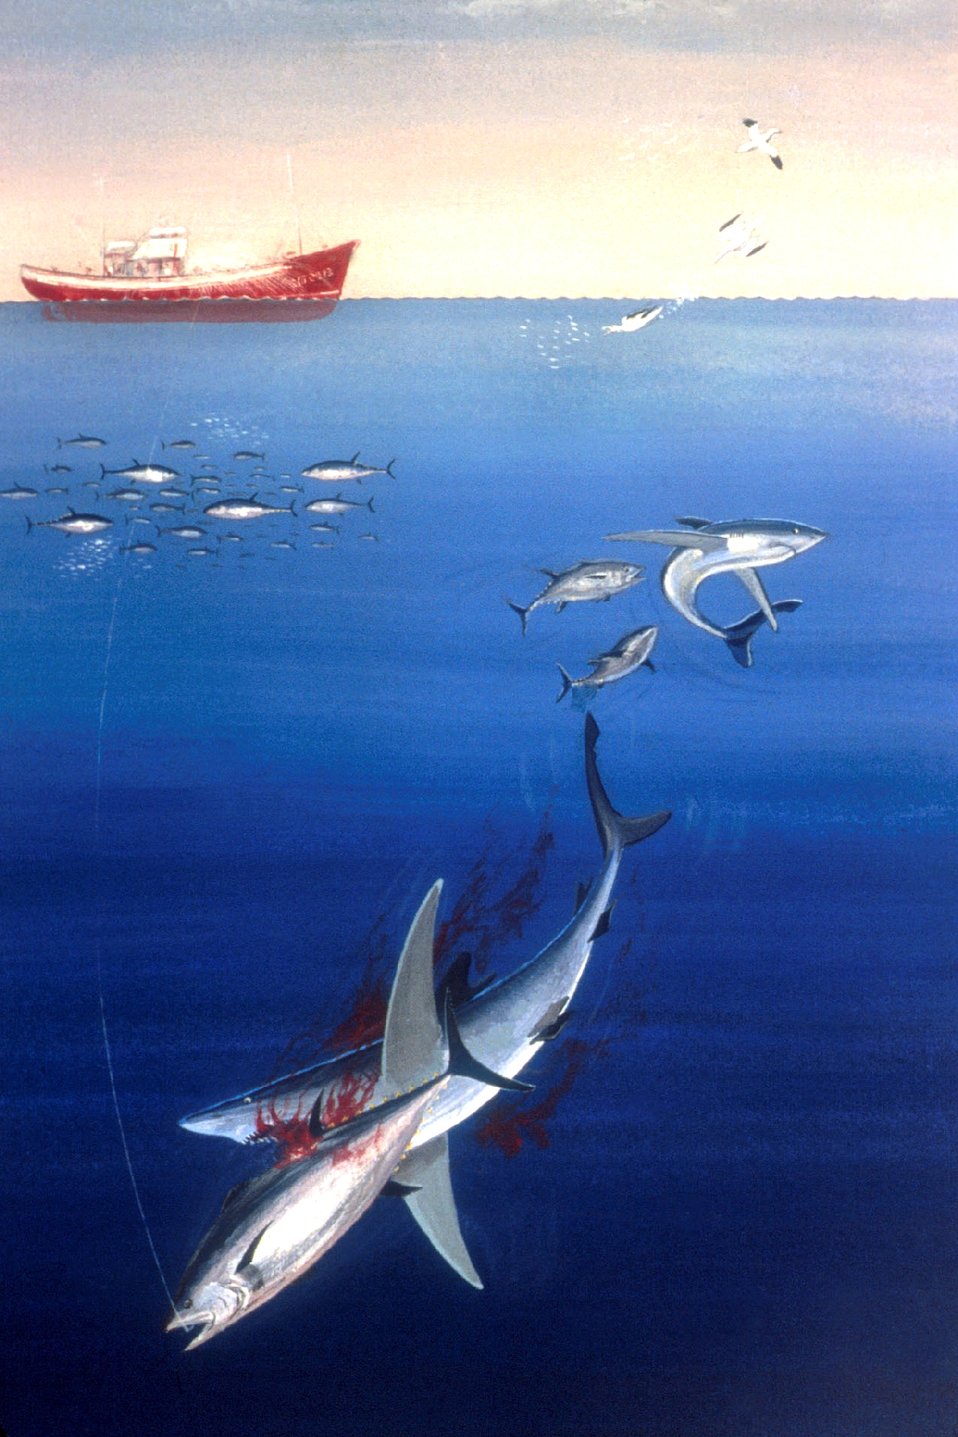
Tuna hooked by pole and line fishing makes easy prey for an opportunistic shark.